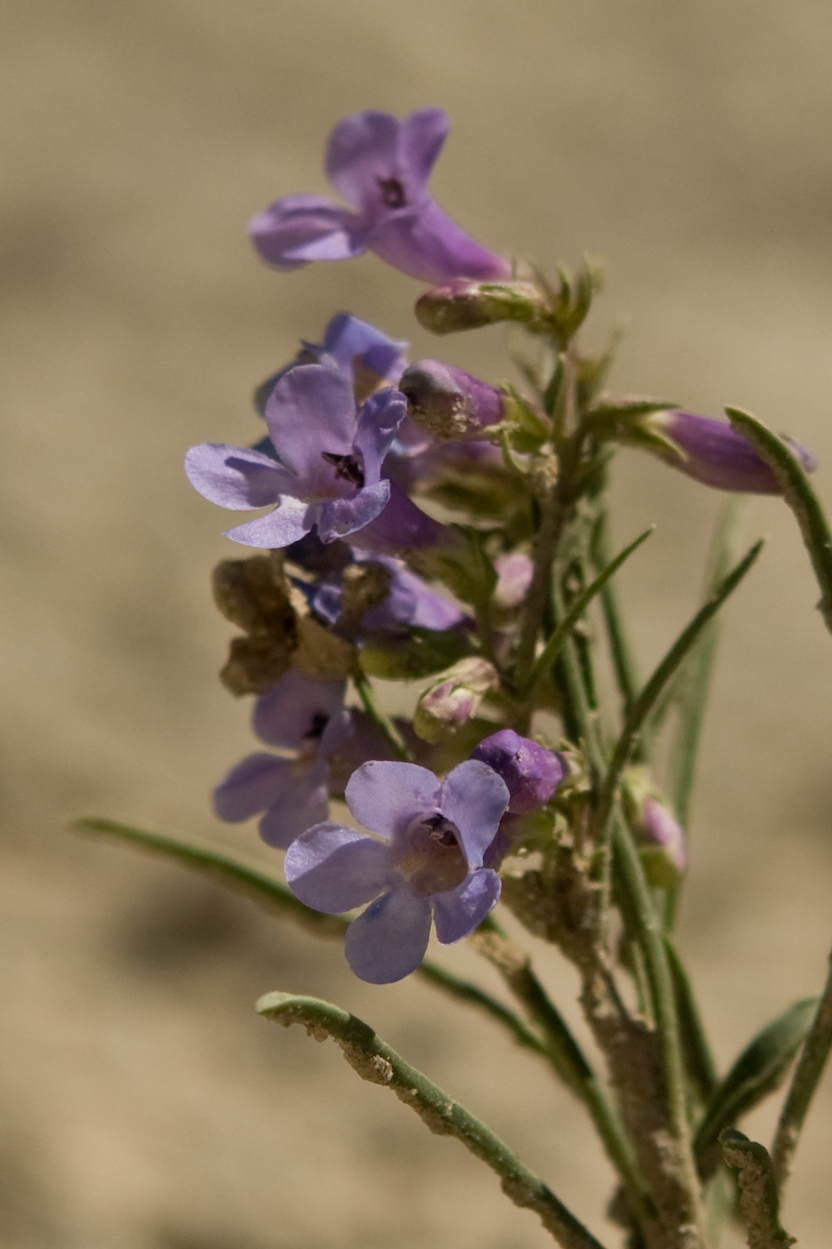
Colorado Rare Plant Conservation Initiative

The Colorado Rare Plant Conservation Initiative (RPCI) is a partnership of 23 statewide and regional agencies, private organizations, and academic institutions working to conserve 121 rare plants in Colorado. As part of these efforts the group developed the Colorado Rare Plant Conservation Strategy, developed Best Management Practices to reduce energy development impacts, addressed climate change, and developed focused strategies for the conservation of individual species at eight priority landscapes. The group has also worked to coordinate volunteer efforts for plant conservation across the state.